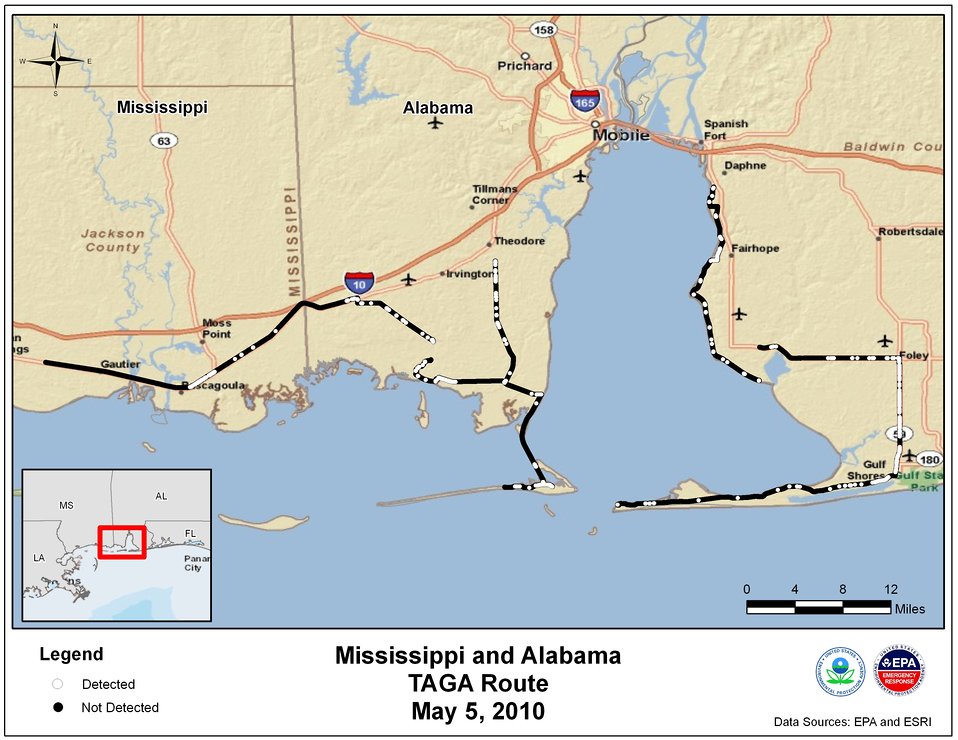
EPA TAGA Air Monitoring Locations May 5, 2010